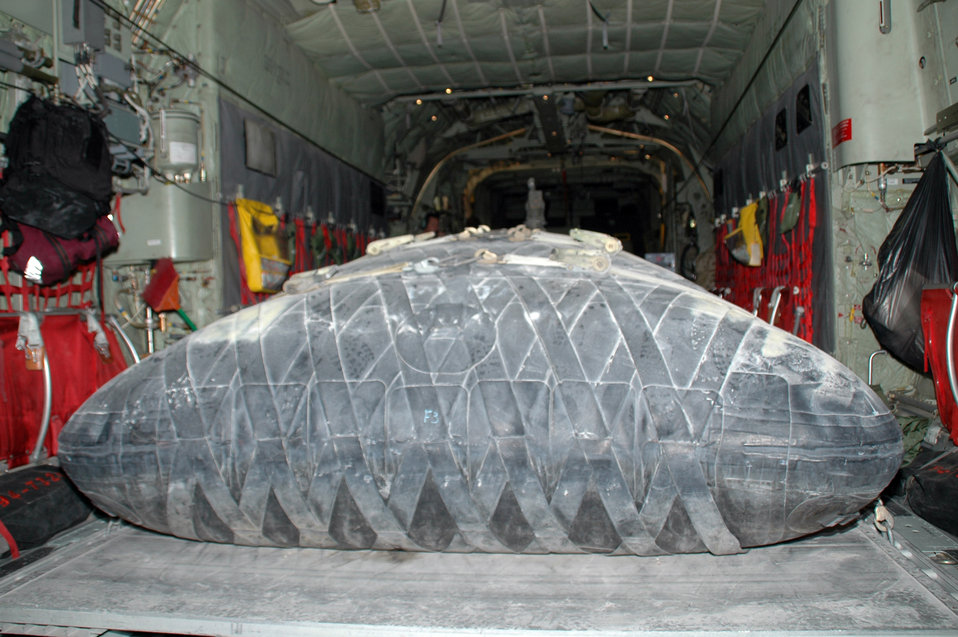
Fuel flight

SOUTHWEST ASIA (AFPN) -- A filled 3,000 gallon fuels bladder, on board a C-130 Hercules is ready to be delivered downrange.